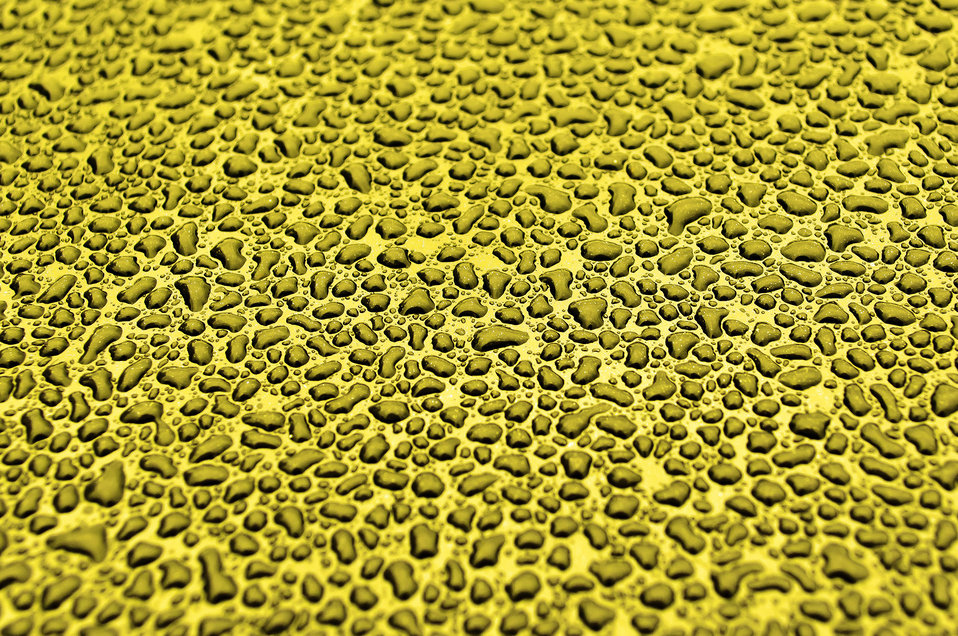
Raindrop - yellow.